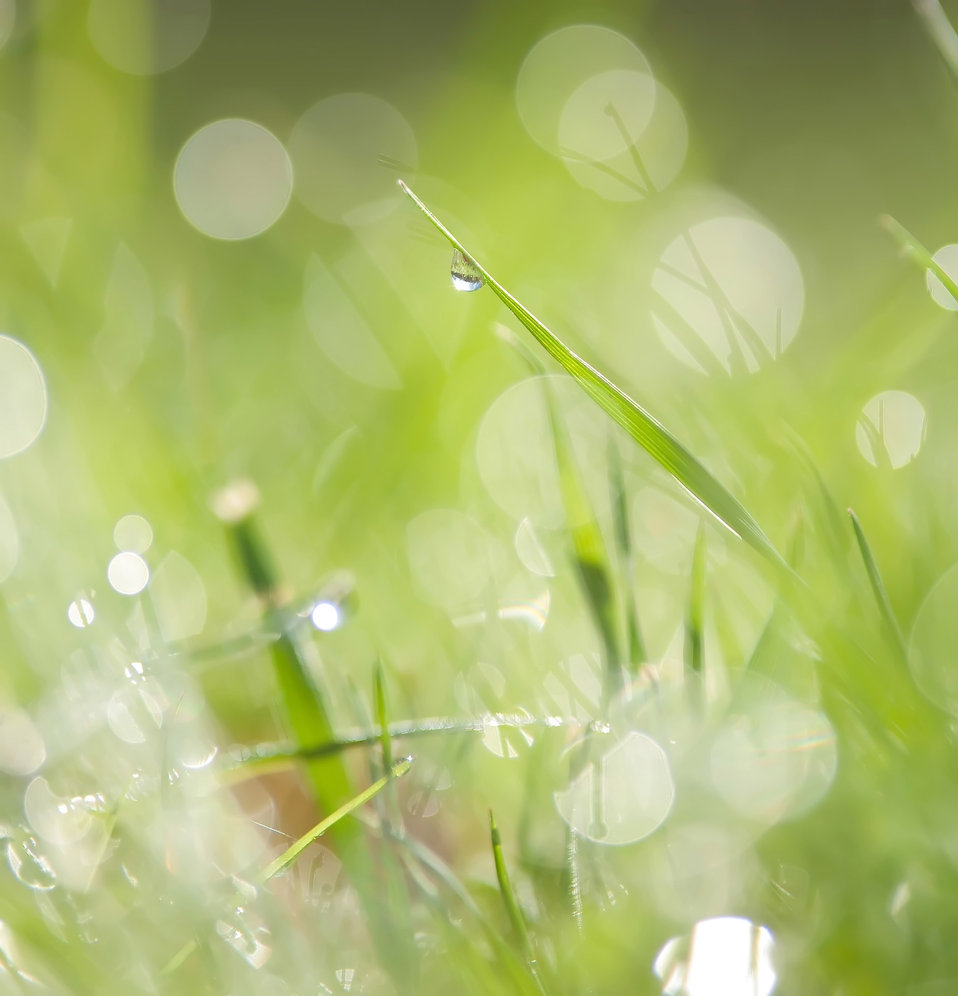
Morning dew on grass.